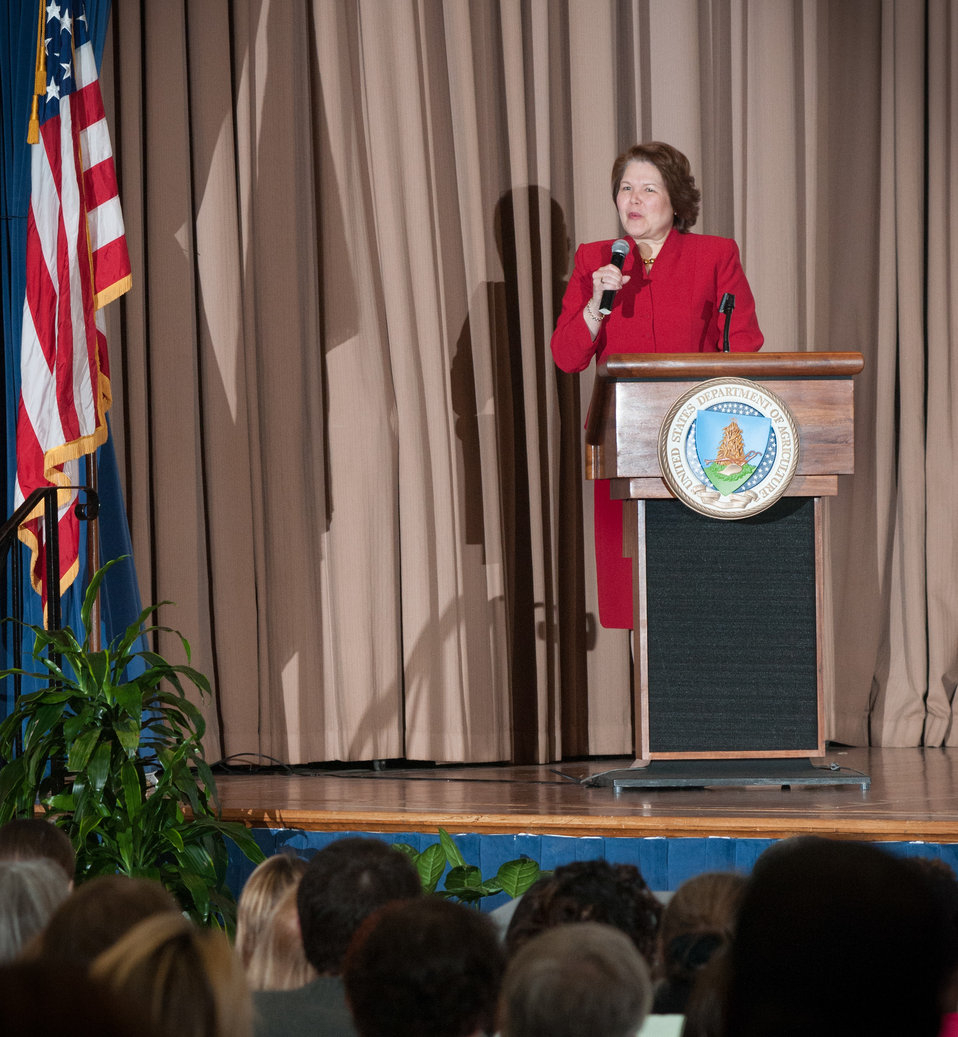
U.S. Department of Agriculture (USDA) Rural Development (RD) Acting Deputy Under Secretary Judith Canales, introduces the keynote speaker, American Association of University Women Executive Director and CEO Linda Hallman, during the 2013 Women’s History Month Observance event, “Women Inspiring Innovation Through Imagination: Celebrating Women in Science, Technology, Engineering, and Mathematics, on Thursday, March 21, 2013, in Washington, D.C. Additional remarks were made by Agriculture Deputy Secretary Dr. Kathleen Merrigan; Administration Deputy Assistant Secretary Deputy Assistant Secretary Robin Heard; and Agriculture Research Service National Programs Associate Administrator Dr. Chavonda Jacobs-Young.